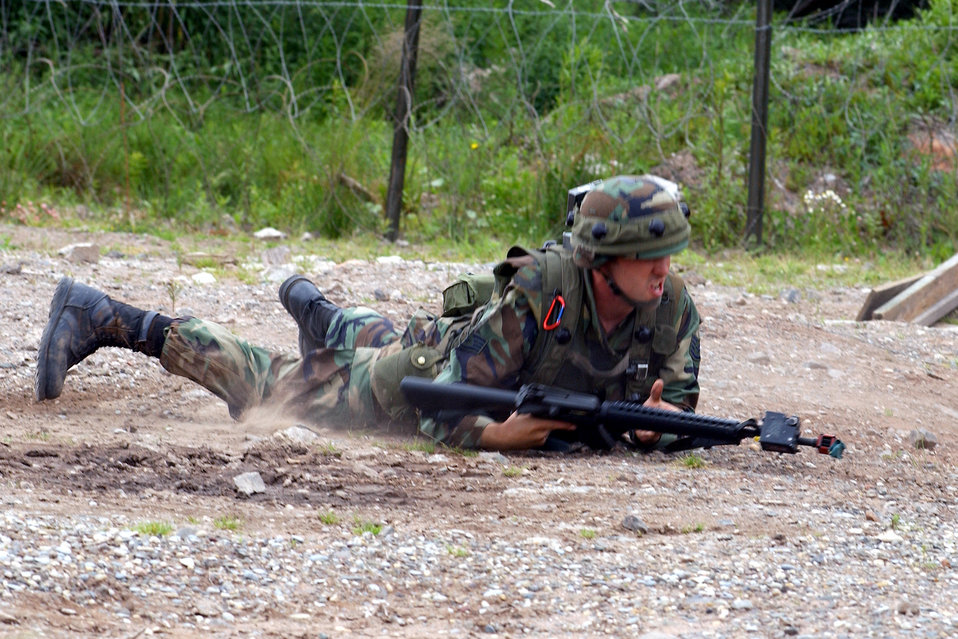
Golden Divide

LANDSTUHL, Germany -- Tech. Sgt. Bradley Stevens, a communications computer systems control craftsman technician from the 1st Combat Communications Squadron at Ramstein Air Base, Germany, hits the ground to move into a prone fighting position during exercise Golden Divide June 12, 2002.